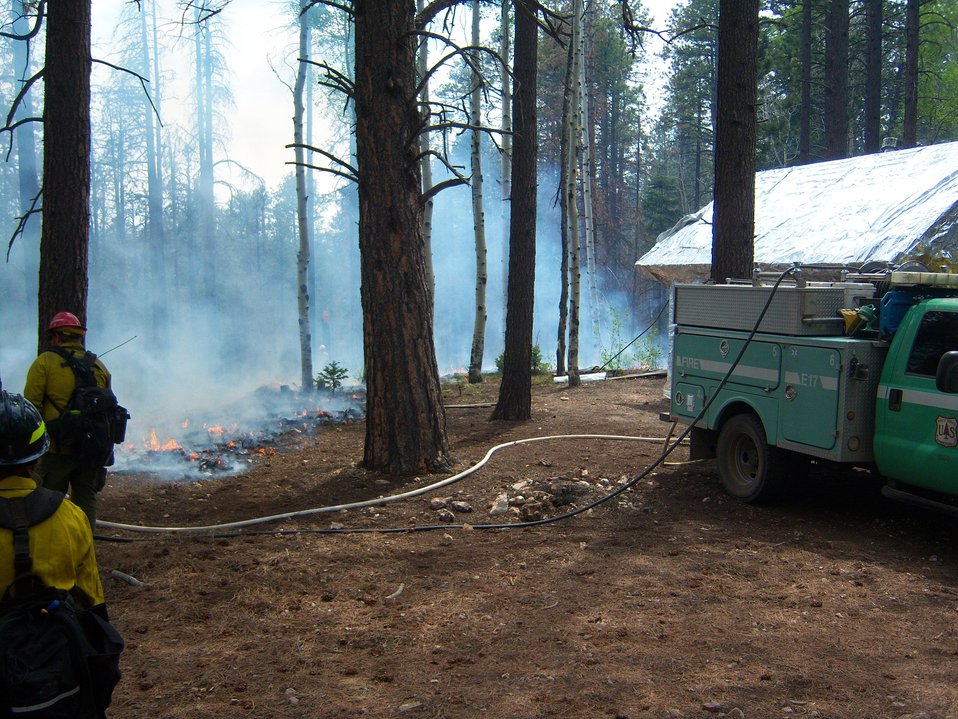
Firefighters burn area around the historic Kanabownits Cabin at the Galahad Fire on May 29, 2014. The Galahad Fire on the North Rim on the Walla Valley Peninsula in the Grand Canyon National Park in Arizona began on May 23, 2014 from lightening and has consumed 2, 950 acres to date and is 30% contained.